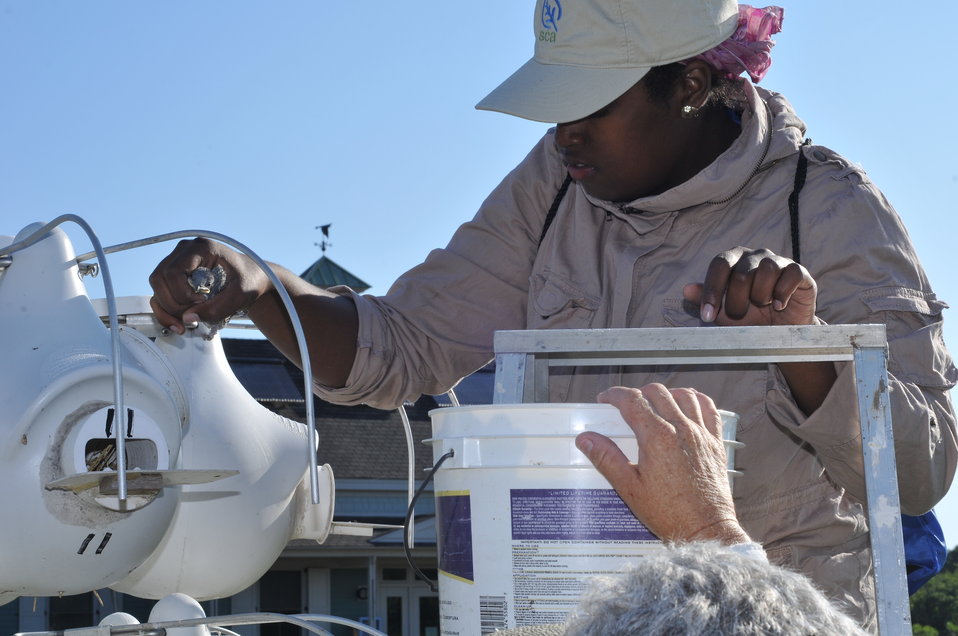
Banding purple martin

A CDIP intern bands a purple martin at Edwin B. Forsythe National Wildlife Refuge.